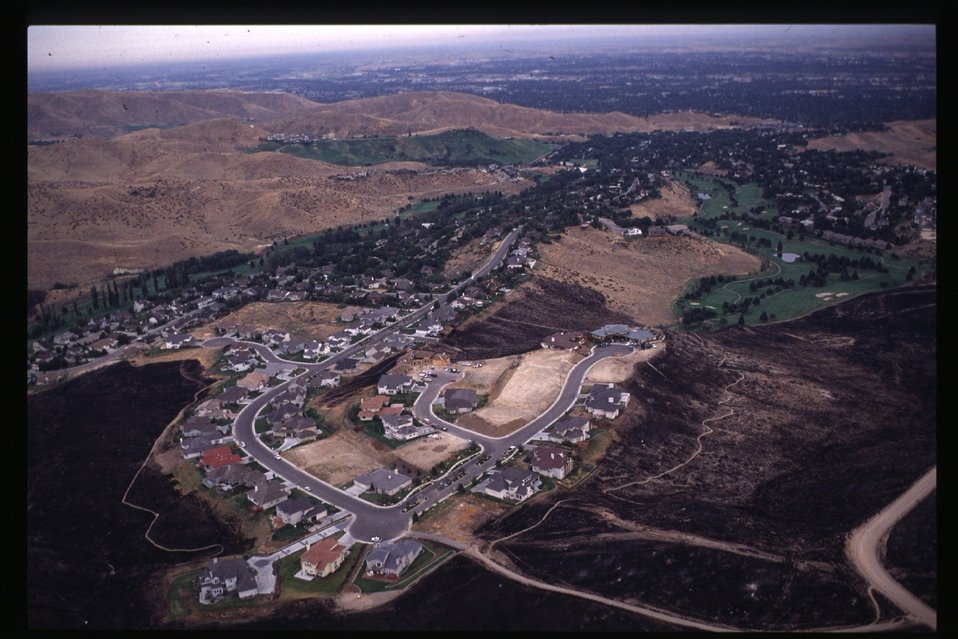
8th Street Fire aerial Urban interface Four Rivers Field Office LSRD Lower Snake River District